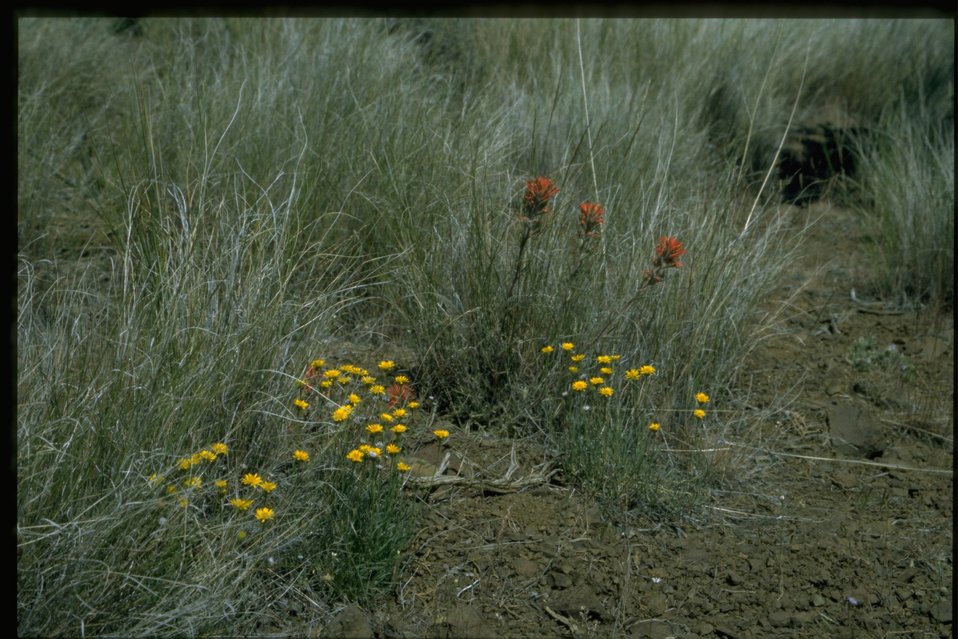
Native bluebunch wheatgrass (Pseudoregneria spicata ssp. spicata) with desert paintbrush (Castilleja Chromosa) and desert yellow fleabane (Erigeron linearis).